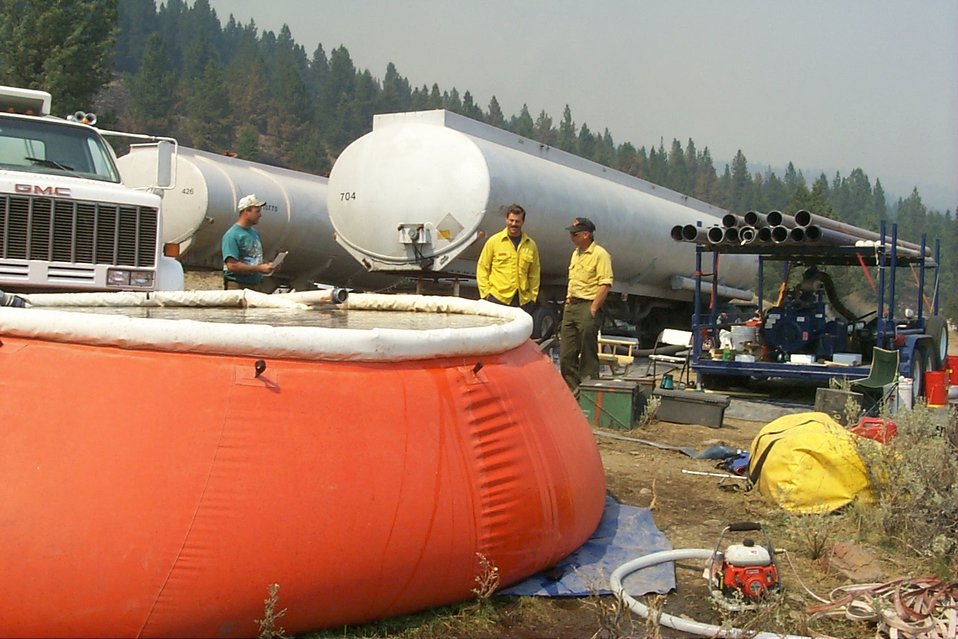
Field water storage Fire Clearwater Fire Salmon Field Office USRD Upper Snake River District